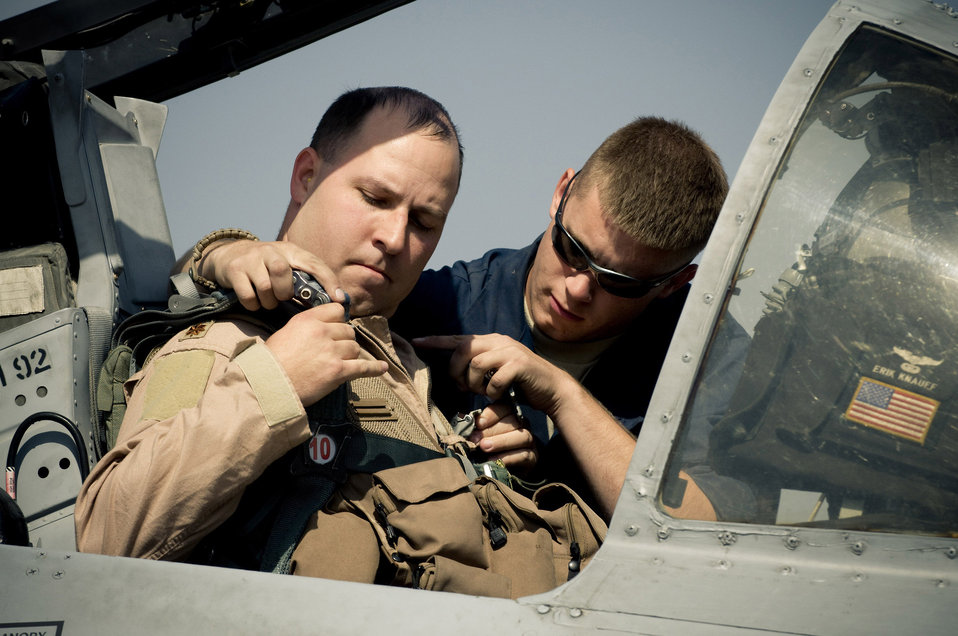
Ready to go

Senior Airman Benjamin Connery helps Maj. Erik Knauff buckle into an A-10 Thunderbolt II Oct. 18 at Bagram Airfield, Afghanistan. Airman Connery is a 455th Expeditionary Aircraft Maintenance Squadron A-10 crew chief. Major Knauff is a 455th Air Expeditionary Wing flight safety officer and pilot.